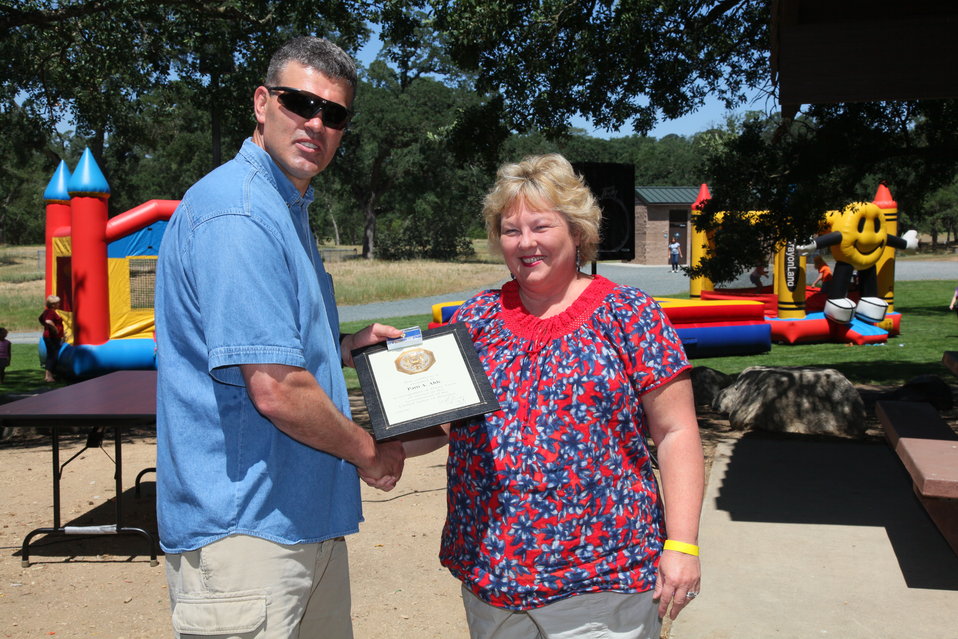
2011 Annual Picnic